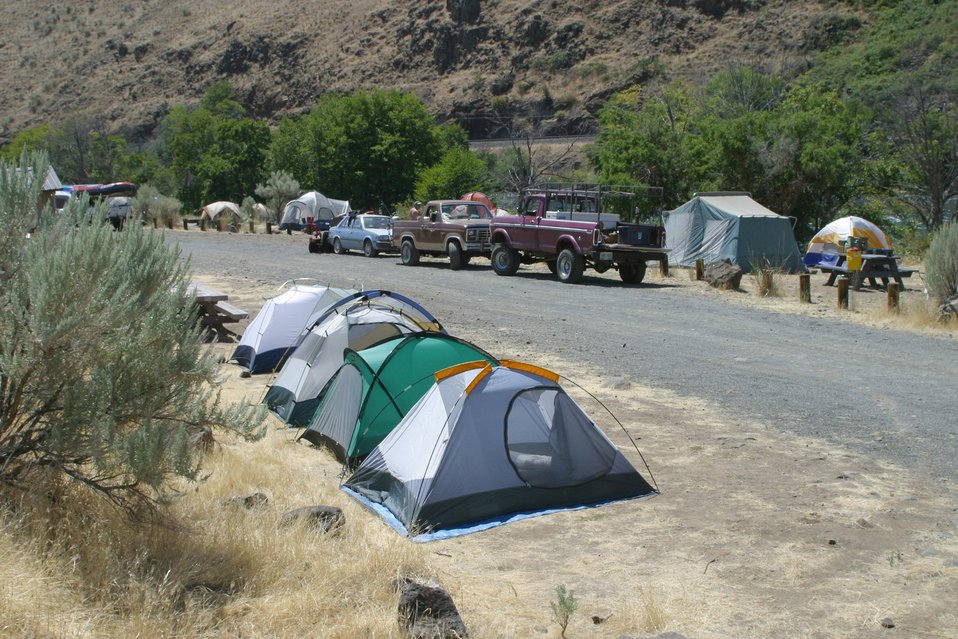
Oasis Campground along the Lower Deschutes River.